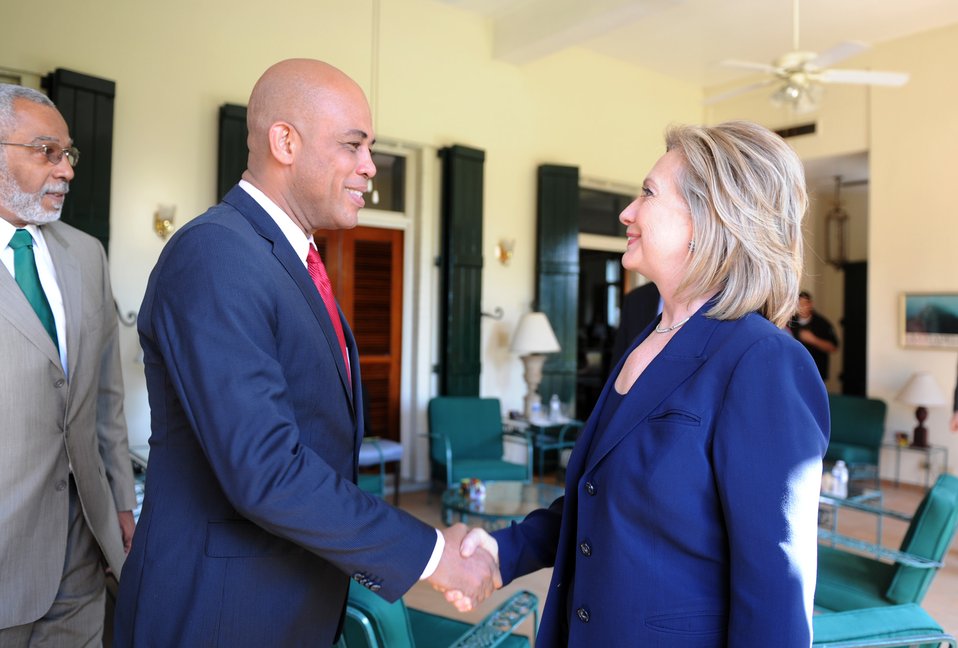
Secretary Clinton Meets With Haitian Presidential Candidate Martelly

U.S. Secretary of State Hillary Clinton meets with Haitian Presidential Candidate Michel Martelly on January 30, 2011, in Port-au-Prince, Haiti.